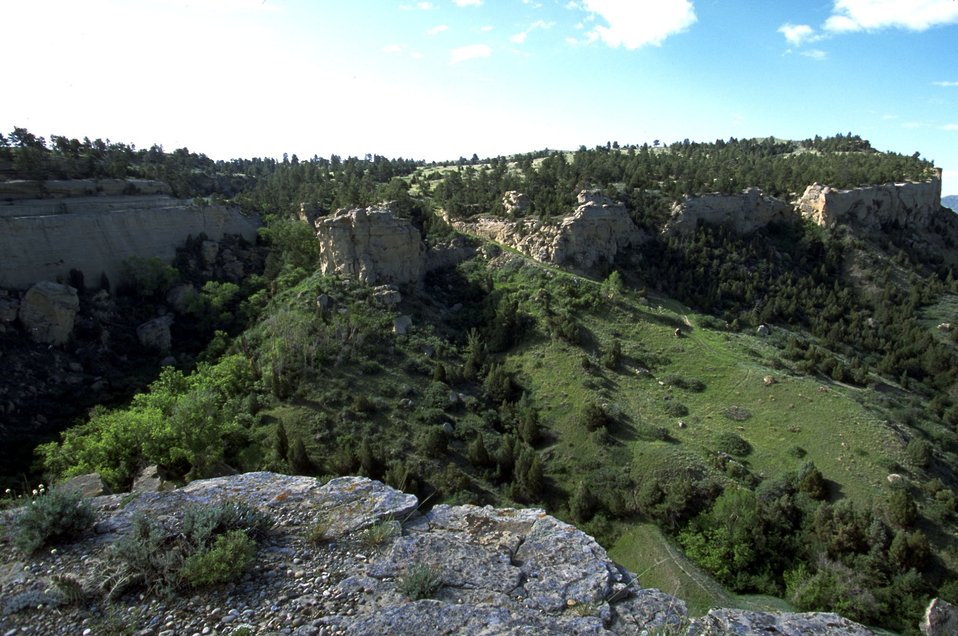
Scenic view of the rimrocks and trail decending to the Yellowstone River in the Four Dances Natural Area